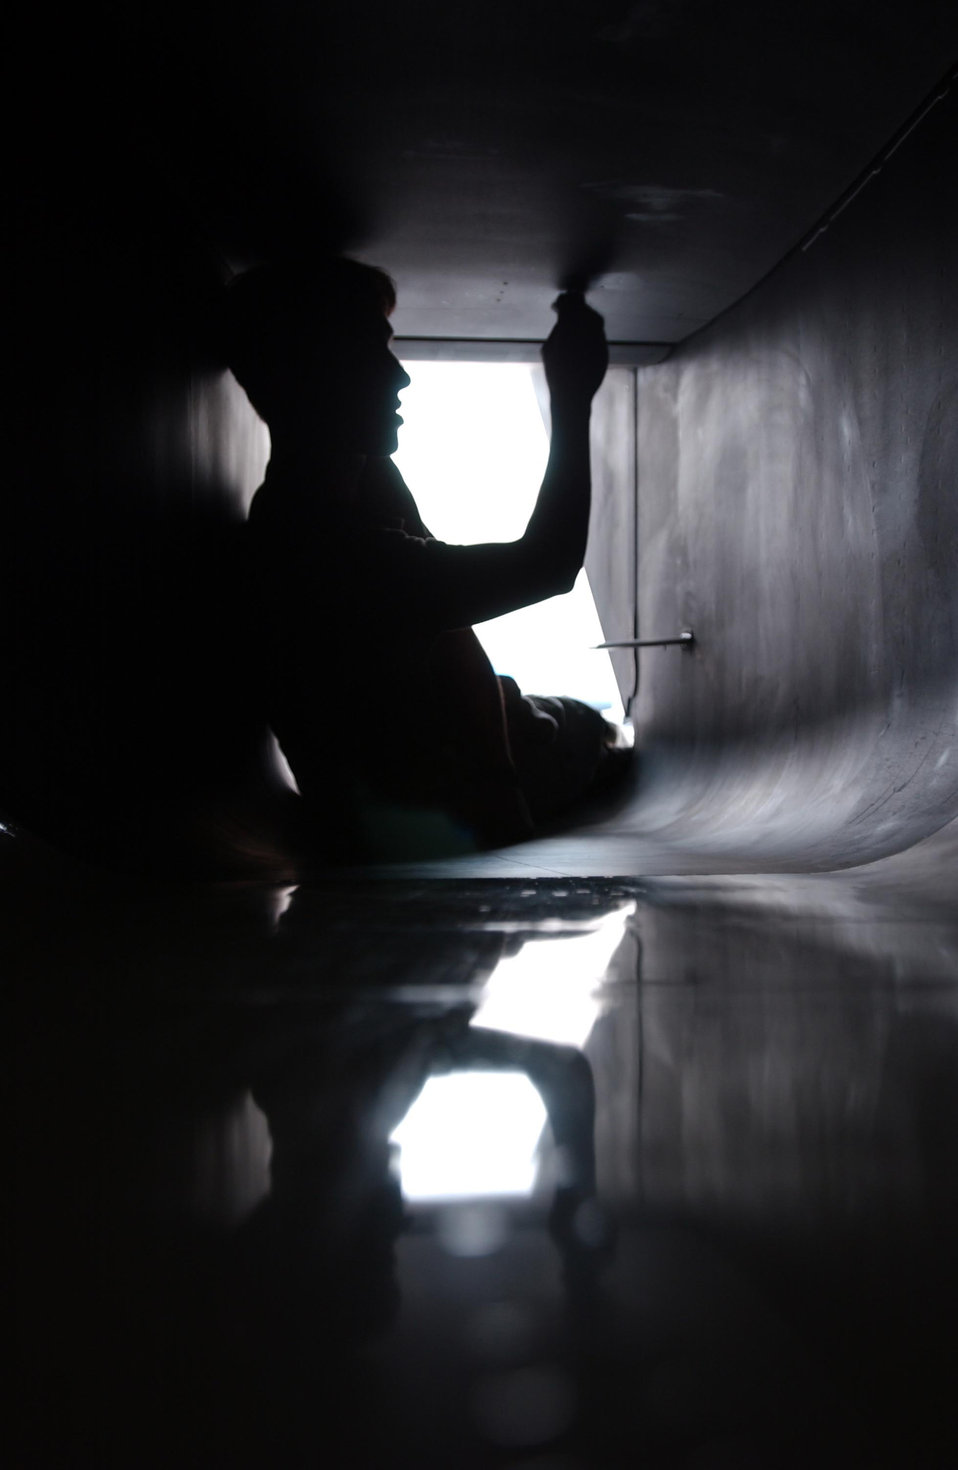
Weekly Maintenance

SOUTHWEST ASIA -- Airman 1st Class Abram Groves cleans the intake of an F-15 Eagle with a cleaning solution called penair Jan. 4. Groves is a crew chief with the 379th Expeditionary Air Maintenance Squadron.